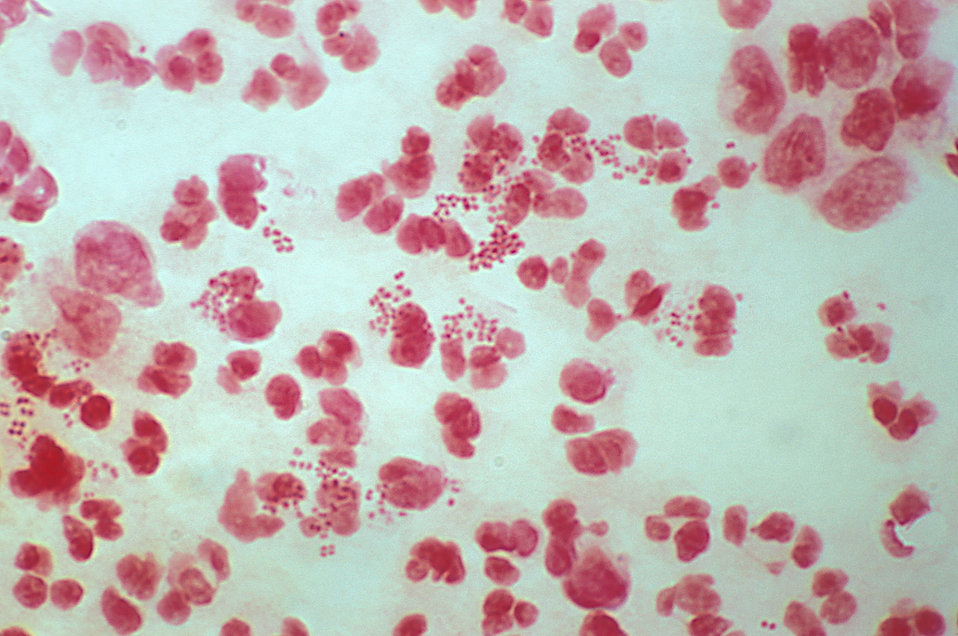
A photomicrograph of a urethral exudate revealing the presence of Gram-negative N. gonorrhoeae organisms.